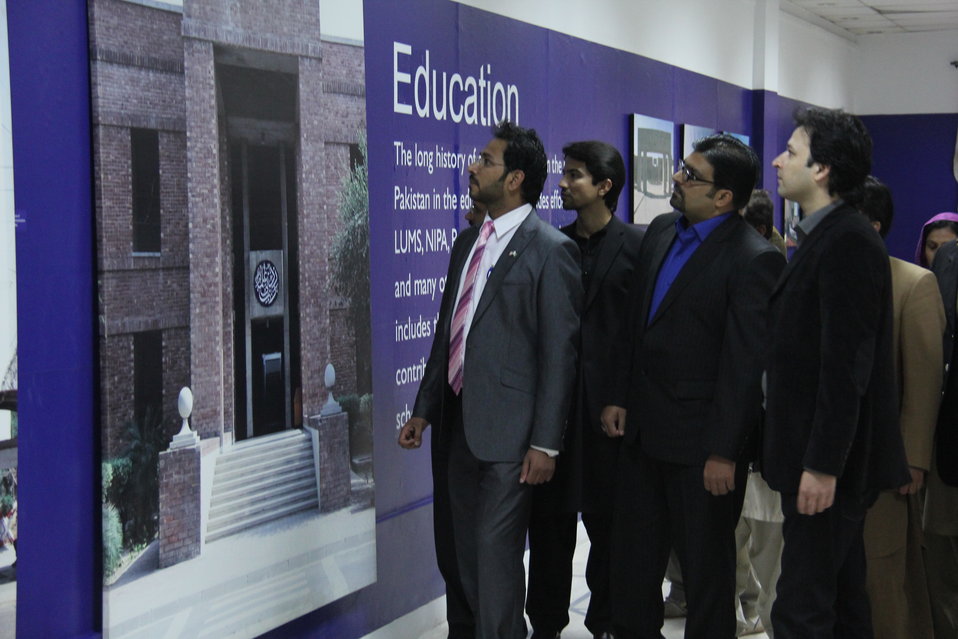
USAID has done extensive work in Pakistan's education sector.